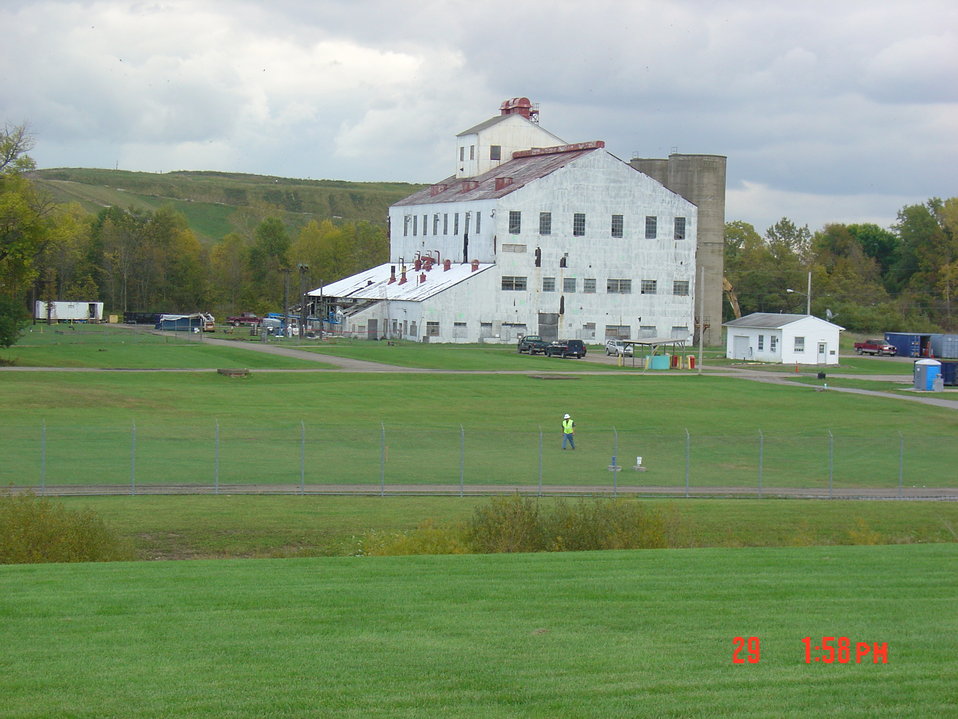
Building 401 NW corner.
Activities from the Niagara Falls Storage Site, which is associated with the former Lake Ontario Ordnance Works. Formerly Utilized Sites Remedial Action Program (FUSRAP), a program initiated in 1974 to identify, investigate and clean up or control sites that were part of the Nation's early atomic energy and weapons program. Activities at the sites that are eligible for FUSRAP were conducted by Manhattan Engineer District (MED) or the Atomic Energy Commission (AEC), both predecessors of the Department of Energy (DOE). The U.S. Army Corps of Engineers was assigned management of FUSRAP by Congress in 1997.